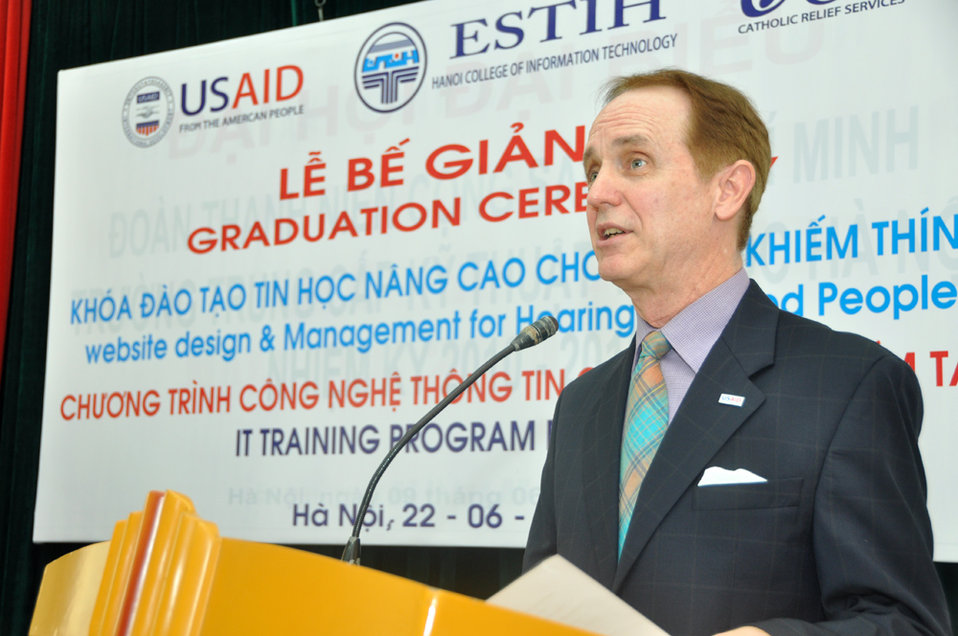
USAID Mission Director Francis Donovan participate in graduation of IT students in Hanoi on June 22, 2011.